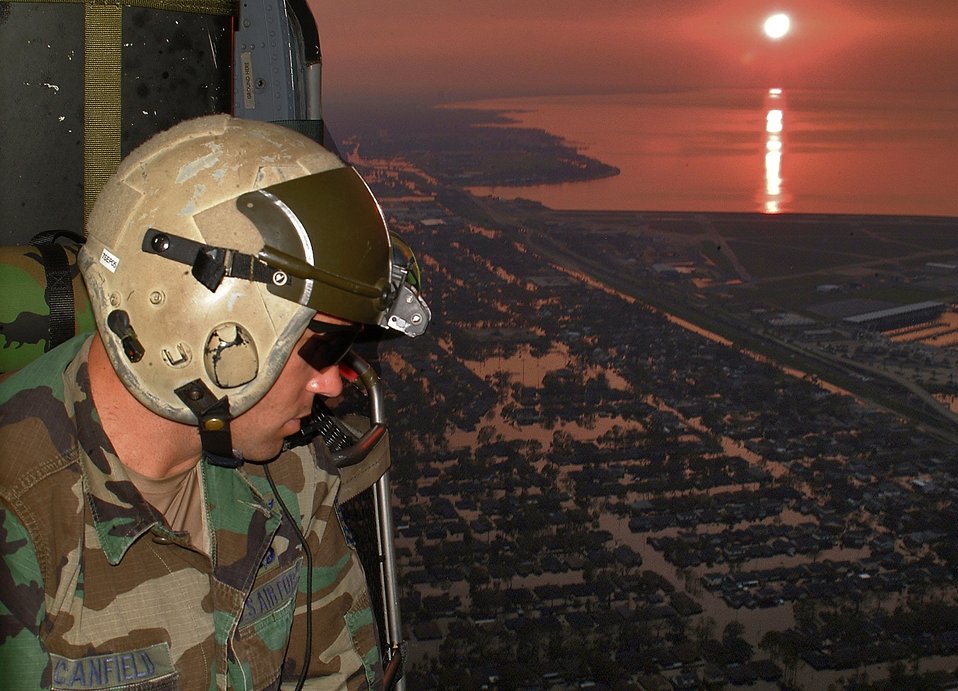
View from a hoist

NEW ORLEANS -- Scanning for signs of survivors, Tech. Sgt. Andrew Canfield keeps a close watch as the sun sets on the flooded city of New Orleans. Sergeant Canfield is a Reserve pararescueman working with a team of reservists and active duty Airmen conducting rescue missions across New Orleans.